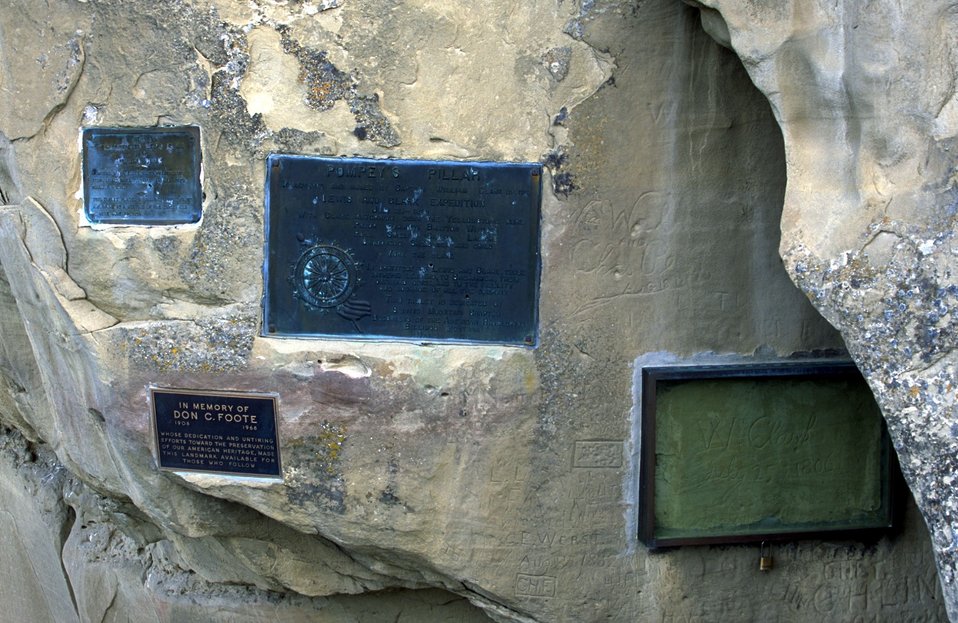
William Clark's signature and associated plaques on Pompeys Pillar